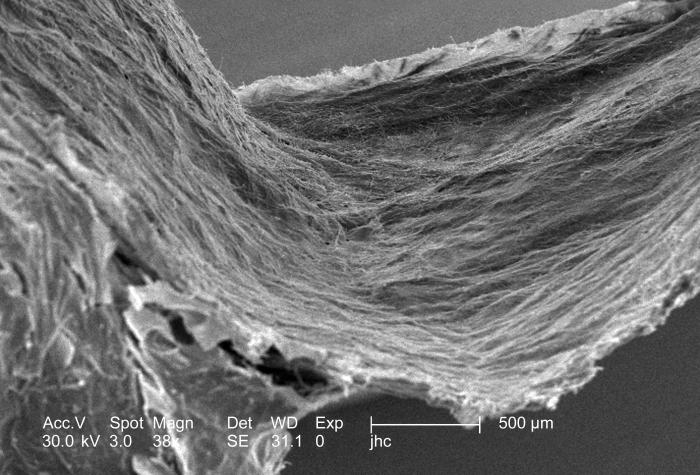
At a very relatively low magnification of only 38x this scanning electron micrograph (SEM) depicted some of the ultrastructural details made visible of the surface of an unidentified wasps' nest found on the ground in the Decatur, Georgia suburbs. Note what appears to be a lamellated, or layered pattern, which was used by the nest builders in the construction of the hexagonally-shaped cells.